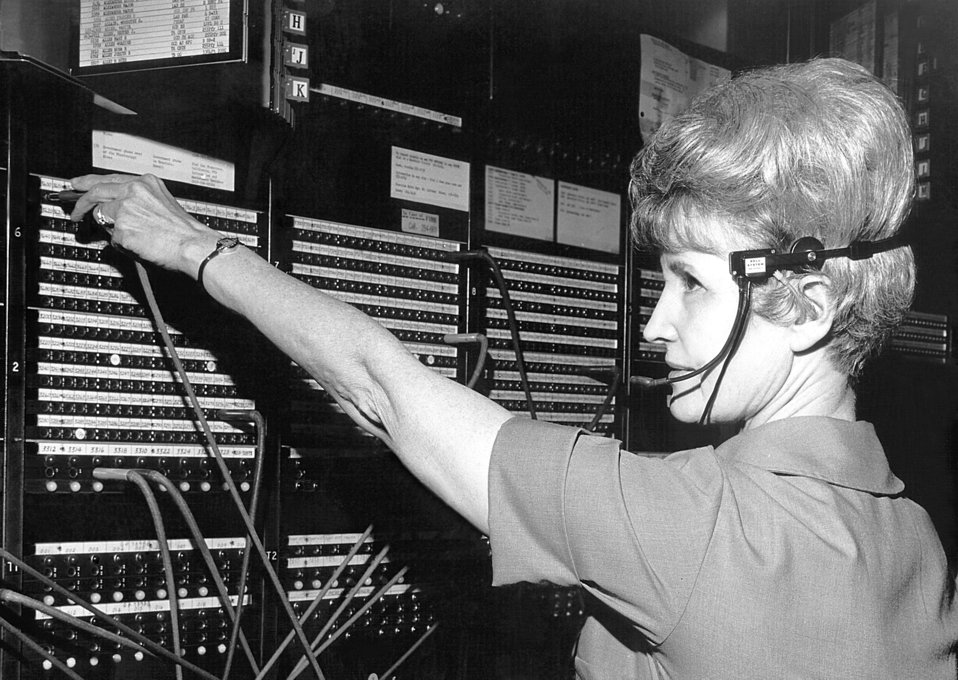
This historic 1974 photograph depicts a CDC telephone operator seated at a switchboard, and wearing a traditional headset.